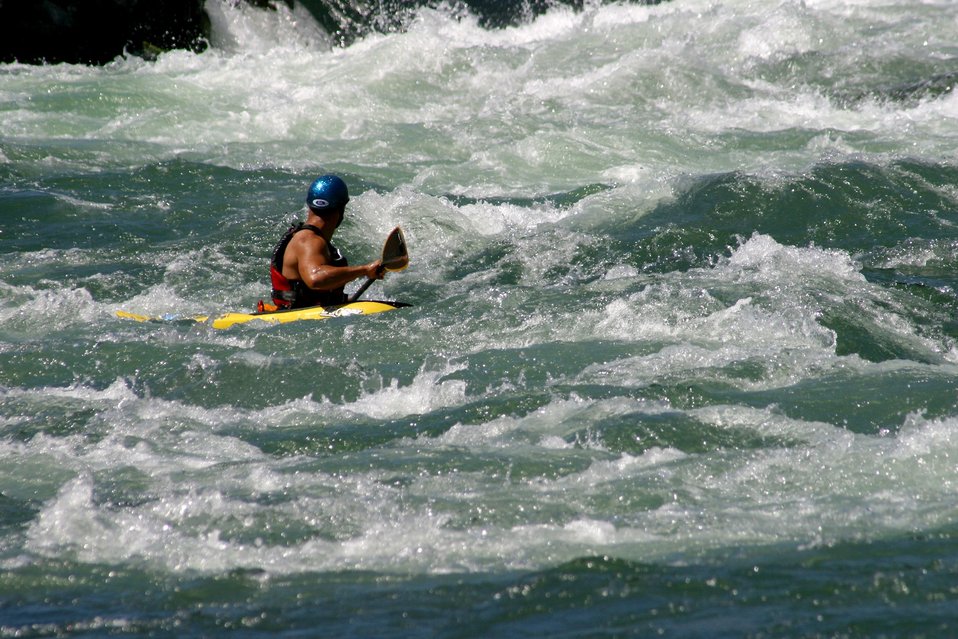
Wapinitia Rapids class III, has large roller coaster waves. 7/26/03 Pelton Dam 3600 cfs: Moody Rapids 4300 cfs.